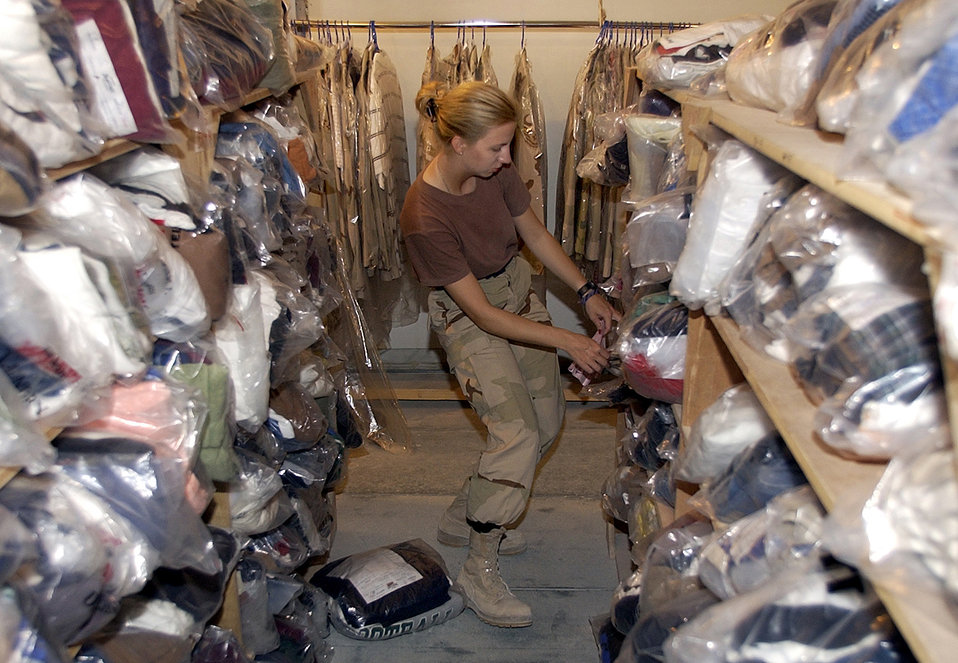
Laundry day

OPERATION IRAQI FREEDOM -- Staff Sgt. Jennifer Shockley, from the 379th Expeditionary Medical Squadron, voluteers at the laundry facility in her time off at this forward-deployed air base in the Middle East on March 24, 2003. Since the start of Operation Iraqi Freedom, servicemembers from different organizations have had to take over the duties of civilian personnel that are no longer permitted on base.